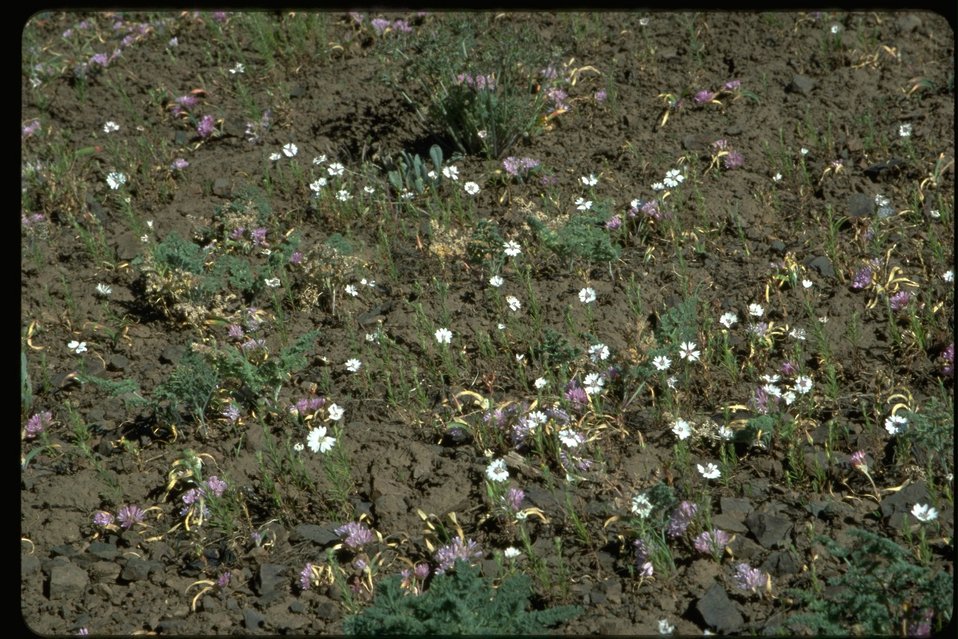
Long shot of wild onion habitat.